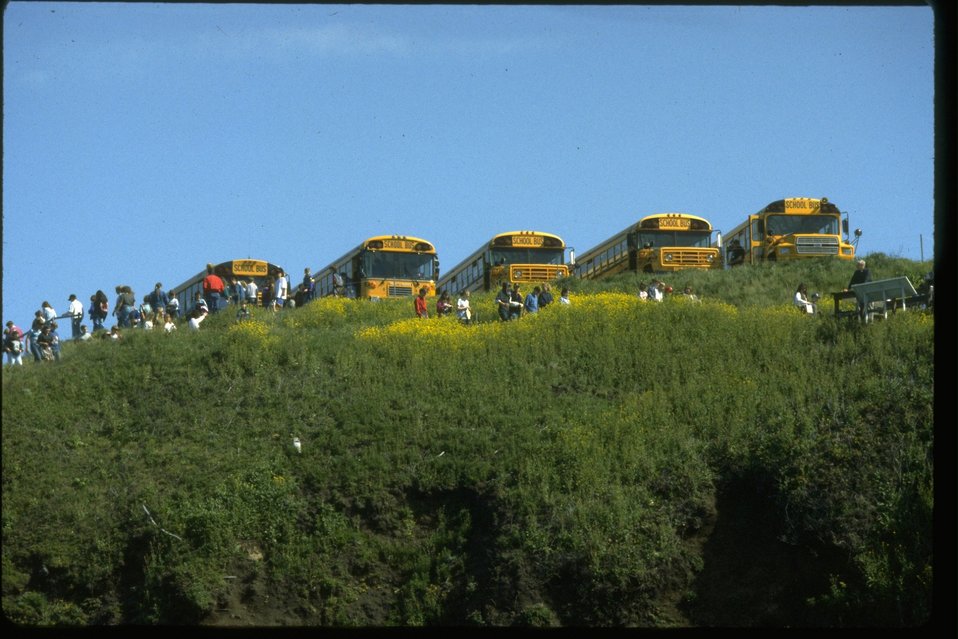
School buses above Cobble Beach tide pools in the Yaquina Head ONA.